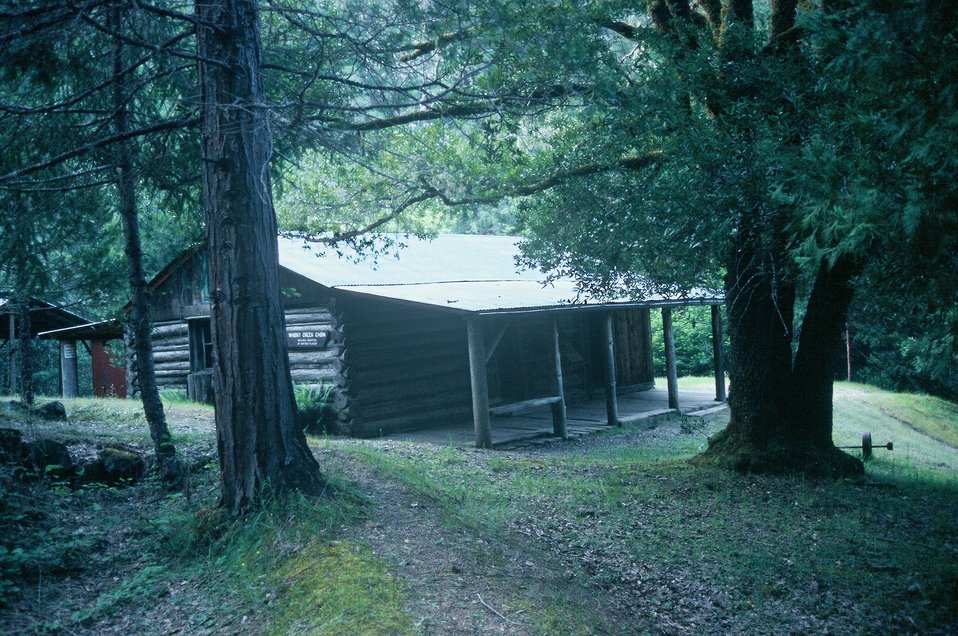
Whisky Creek Cabin along the Wild section of the Rogue River from Grave Creek to Foster Bar. 3100 cfs at Grants Pass and 5300 at Agness.